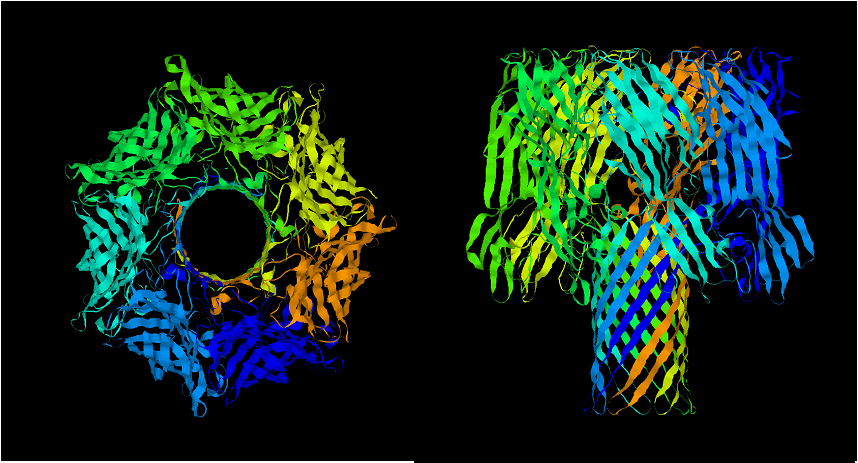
Biological Nanopore

Crystal structure of a biological nanopore. NIST researchers are studying ways in which biological or synthetic nanopores may one day be used to analyze DNA or to detect chemical or biological agents. (Data Credit: Song, et al. 1996. Science 274, 1859)